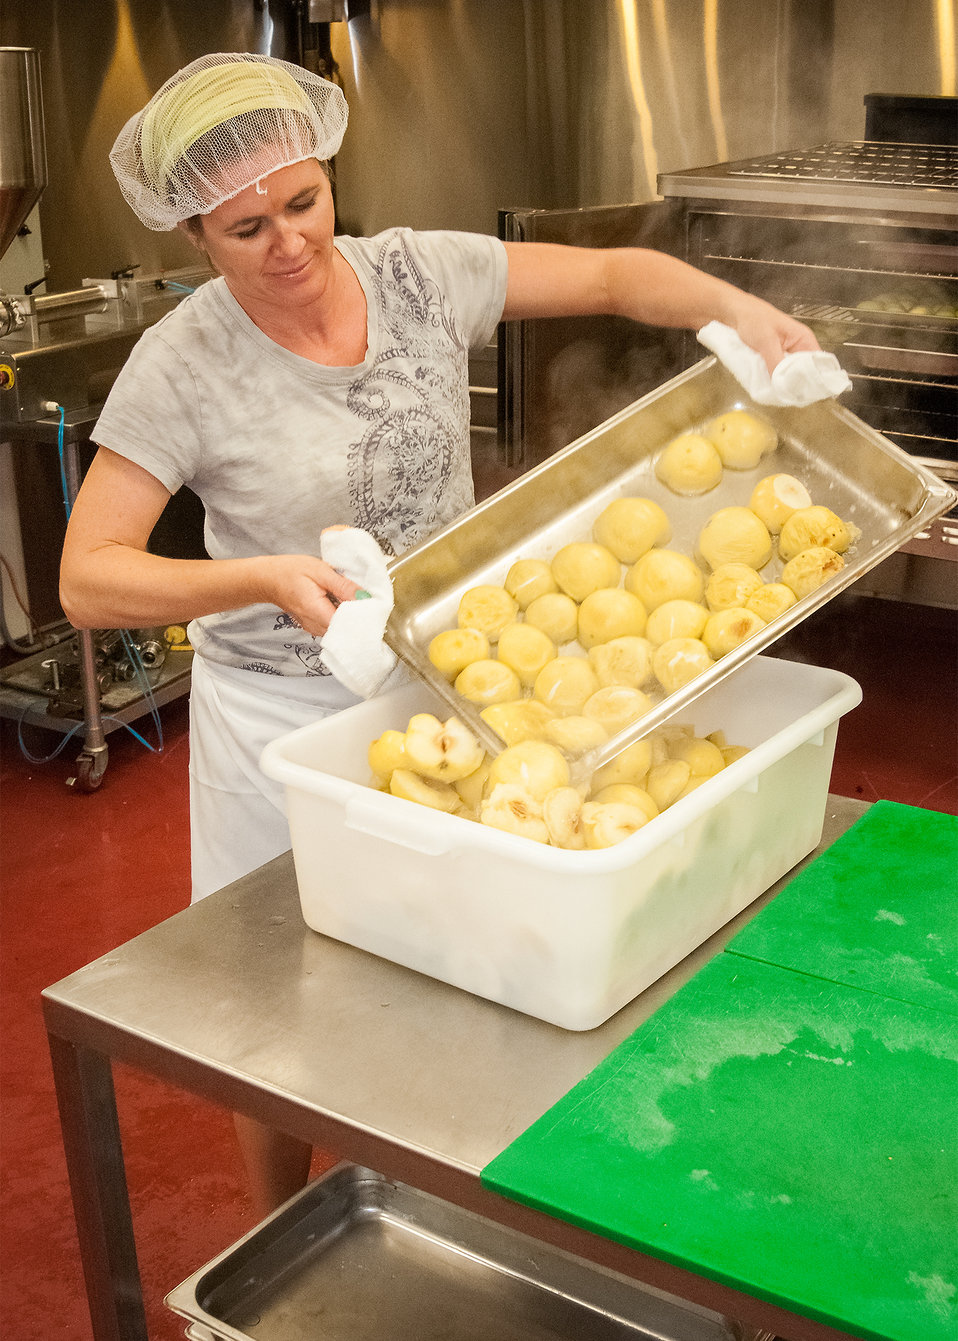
Allyson Spanier, pours baked apples into a container for her Baked Apple and Squash baby food at the Vermont Food Venture Center in Hardwick, VT. Spanier explains why she started Vermont Baby: “I wanted to provide parents with some unique, healthy, tasty options that they would feel good about feeding to their babies.” Her goals have ben met. The baby food that she makes is purely Vermont with organic ingredients from local farmers.
The Vermont Food Venture Center a non-profit multi-purpose incubator kitchen and food processing facility operated by the Center for an Agricultural Economy in Hardwick, VT. The Vermont Food Venture Center, a non-profit multi-purpose incubator kitchen and food processing facility operated by the Center for an Agricultural Economy in Hardwick, VT received assistance through a U.S. Department of Agriculture (USDA) Rural Development (RD) Rural Business Enterprise Grant (RBEG). The grant offers farmers in a region of rural America that celebrates food, farm and local economy the tools necessary to convert crops to value added business to start or expand their food-based business with the potential to create jobs and increase economic opportunity on Sep. 19, 2013.